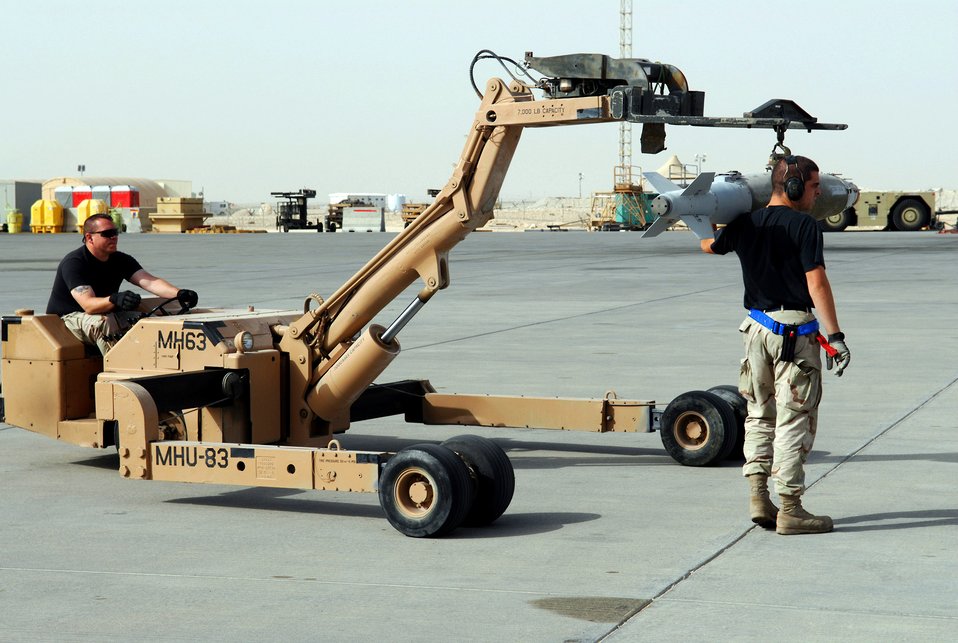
Time to reload

Senior Airman Brett Williamson guides as Staff Sgt. Greg Eaton moves ordnance to be loaded on a B-1B Lancer Jan. 10 at an air base in Southwest Asia. Both Airmen are assigned to the 379th Expeditionary Aircraft Maintenance Squadron.